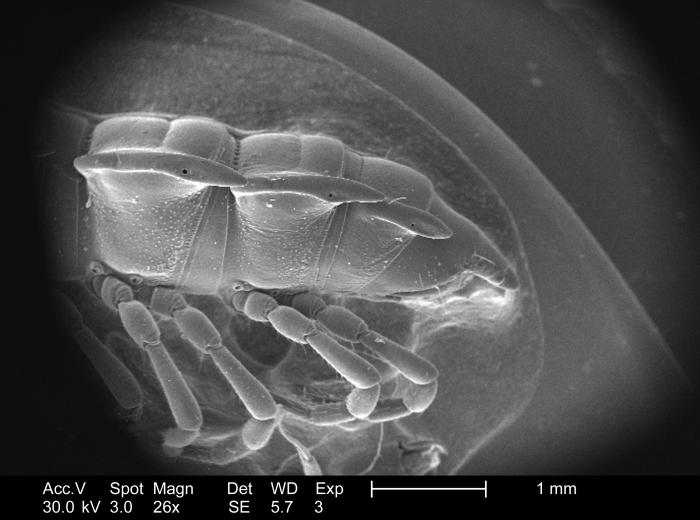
Magnified 25x, this scanning electron micrograph revealed some of the morphologic details adorning the surface of the chitinous exoskeletal cuticle covering an unidentified millipede found deceased on the ground in the Decatur, Georgia suburbs.